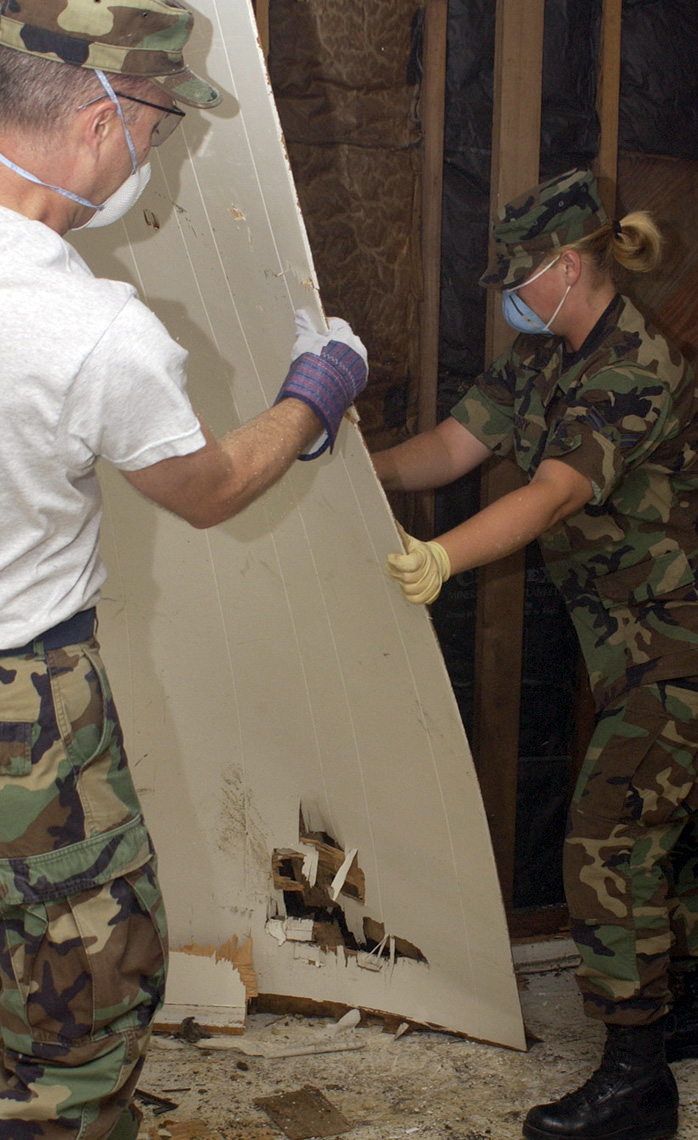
Hurricane relief efforts

BILOXI, Miss. (AFPN) -- Master Sgt. Chris Mossor (left) and Airman 1st Class Rebecca Sherry strip the walls in a flooded home. Sergeant Mossor is with the 81st Training Group and Airman Sherry is with the 332nd Training Squadron.